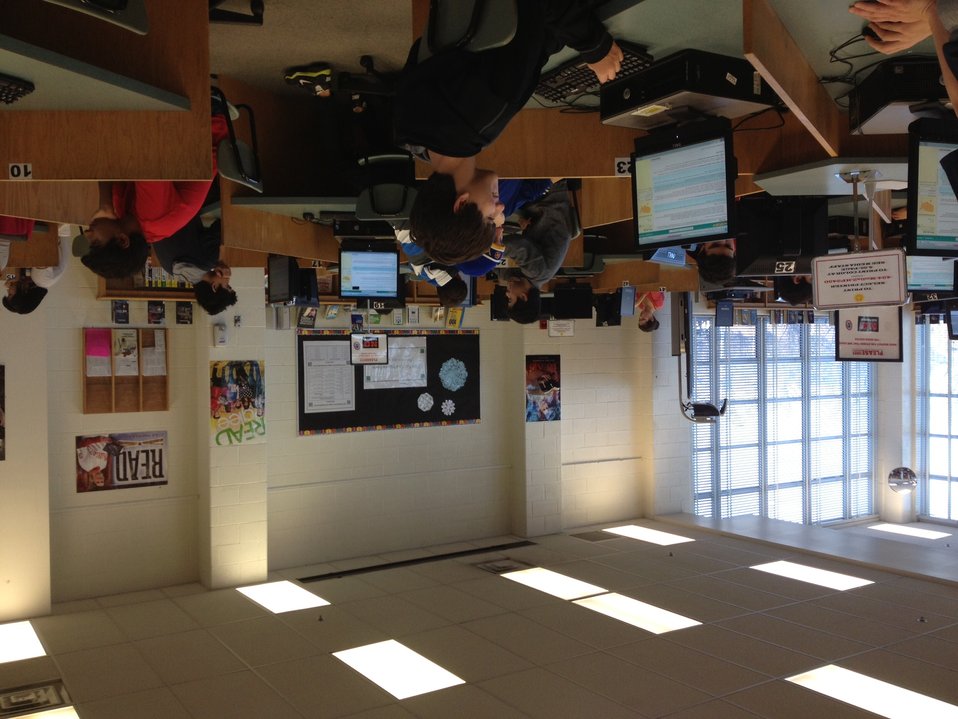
Chat Day NDFW 2013

Rockville, MD. Students from Walter Johnson H.S. participate in NIDA's National Drug Facts Week Chat Day Event, 2013.